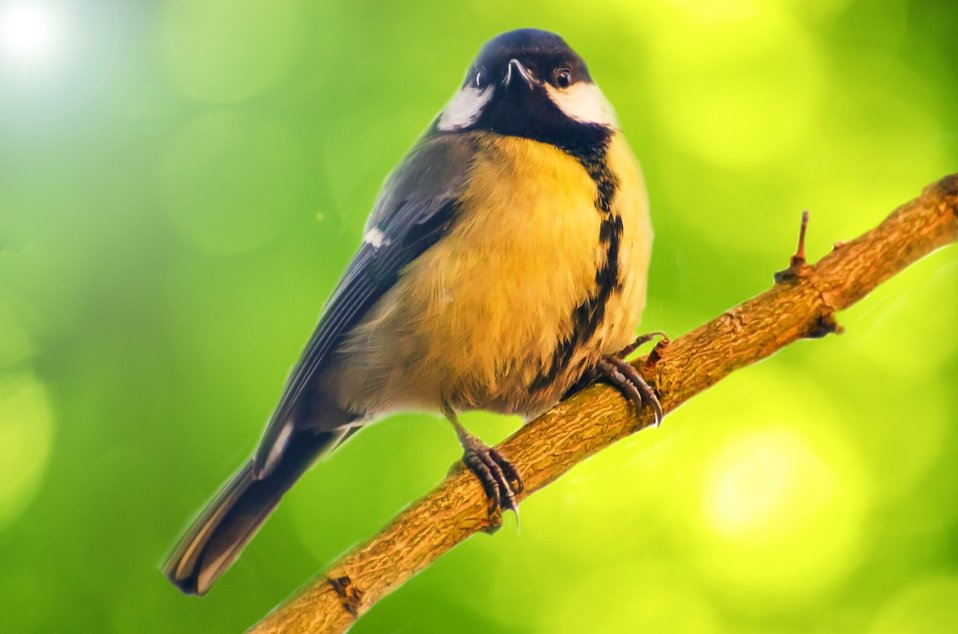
Bird

Birds on the branch.